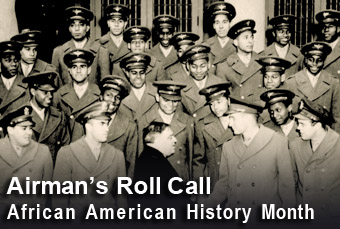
Airman's Roll Call: National African American History Month

This week's Airman's Roll Call focuses on the history of National African American History Month.